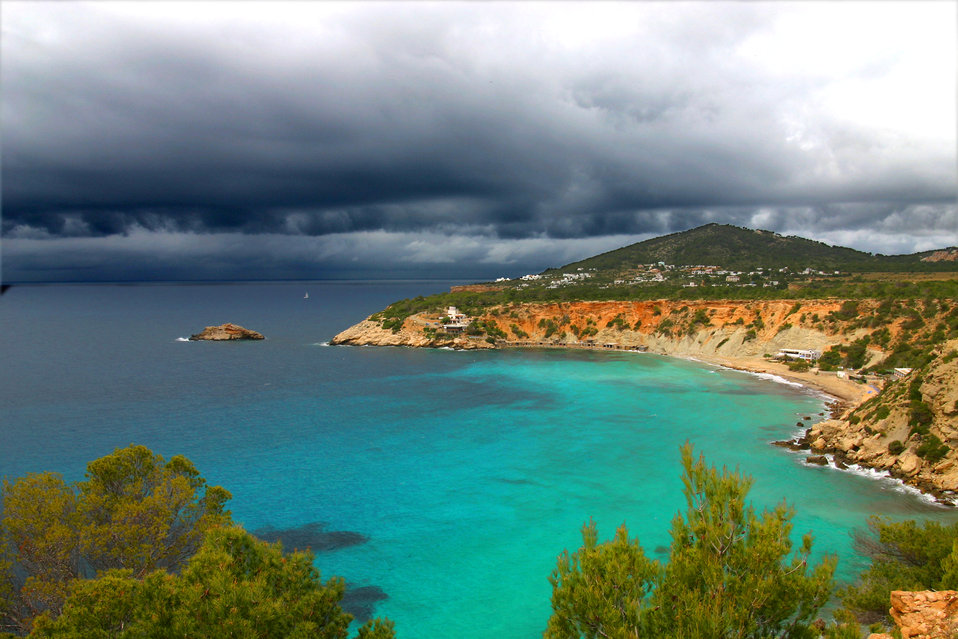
Bildbeschreibung: Ibiza Quelle: 'selbst fotografiert' Fotograf/Zeichner: ADC